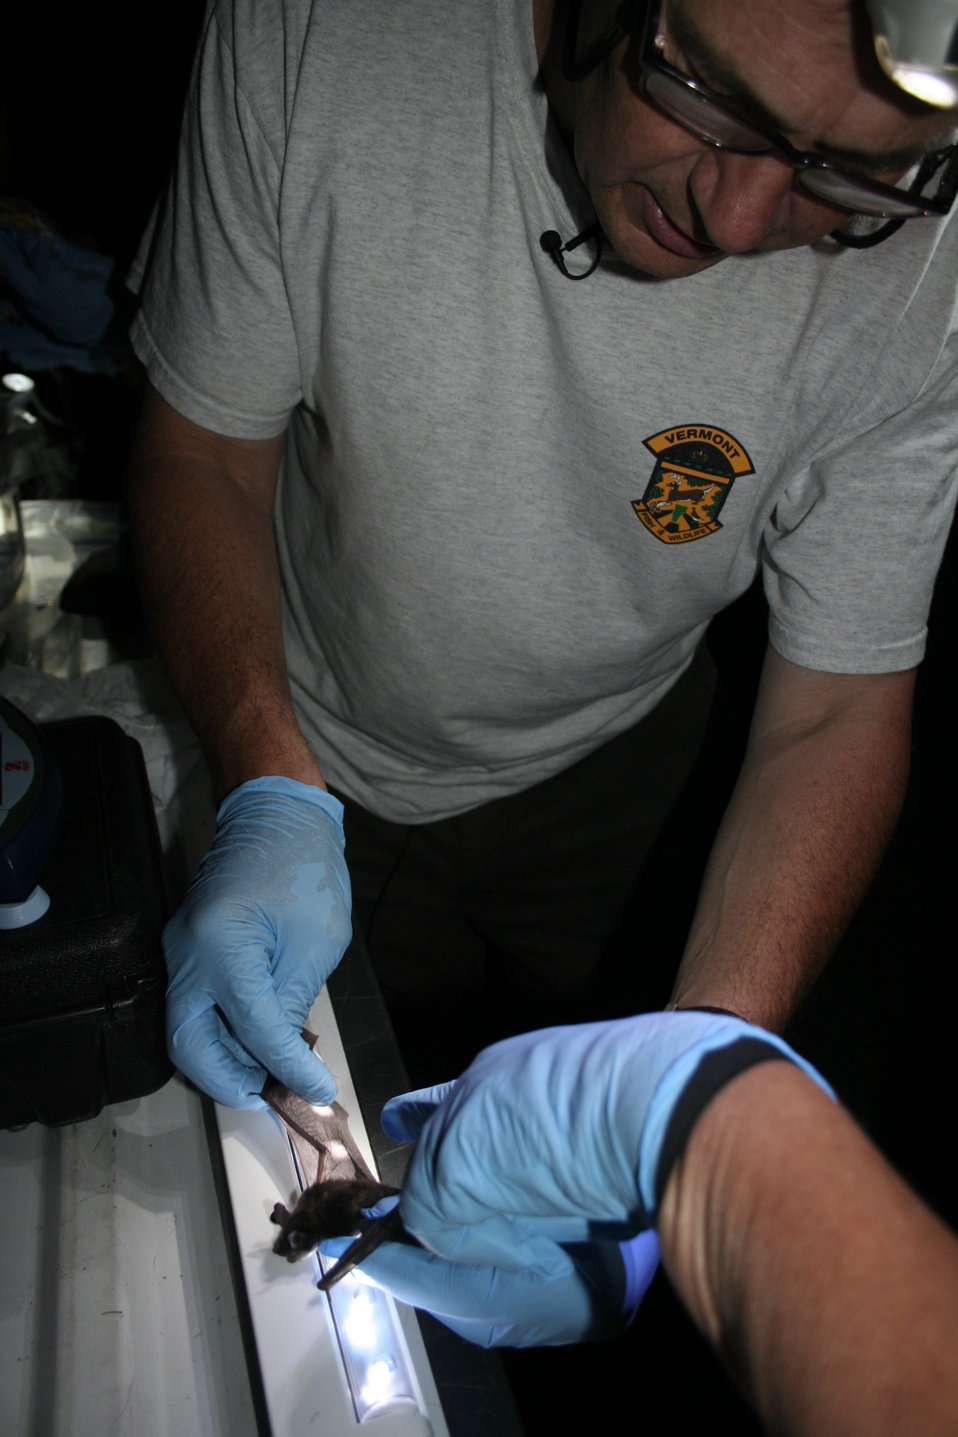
Biologists inspect bat wing for signs of WNS

USFWS and VT DFW biologists inspect bats for lingering signs of white-nose syndrome.

The disease only affects hibernating bats in winter, but bats that survive may exhibit damage to wings.